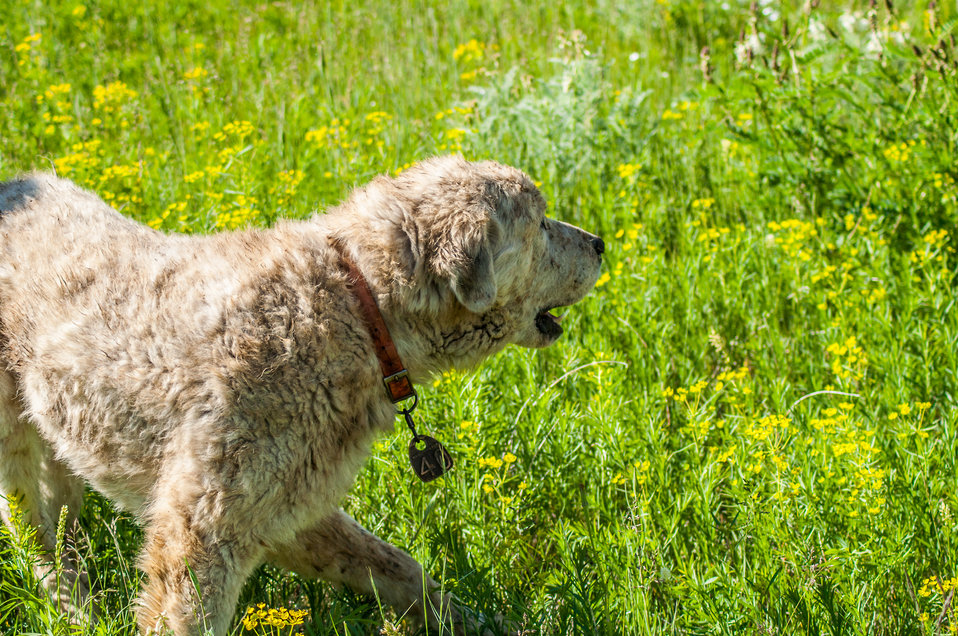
Goat landing on Bozeman Fish Technology Center

On June 8 at 5:00 p.m., 409 yearling domestic goats were off-loaded on the Bozeman Fish Technology Center (BFTC) campus. Thus begins a 3-4 year project of monitored targeted grazing and applications of friendly insects to control noxious weeds and manage brush overgrowth on property of the U.S. Fish and Wildlife Service BFTC.

Purposes of this effort are to reduce the presence of undesirable vegetation, promote restoration of native plants, and assist with fire protection by reducing burnable plant biomass.

The cooperative venture involves the U.S. Fish and Wildlife Service, Montana Outdoor Science School, Friends of the Bozeman Fish Technology Center, Gallatin Valley Land Trust, U.S. Forest Service, and Prescriptive Livestock Services. Integrated Weed Control is supplying the insects as an in-kind contribution to the project, and has applied insects on the BFTC’s 'hot spots' in previous years.